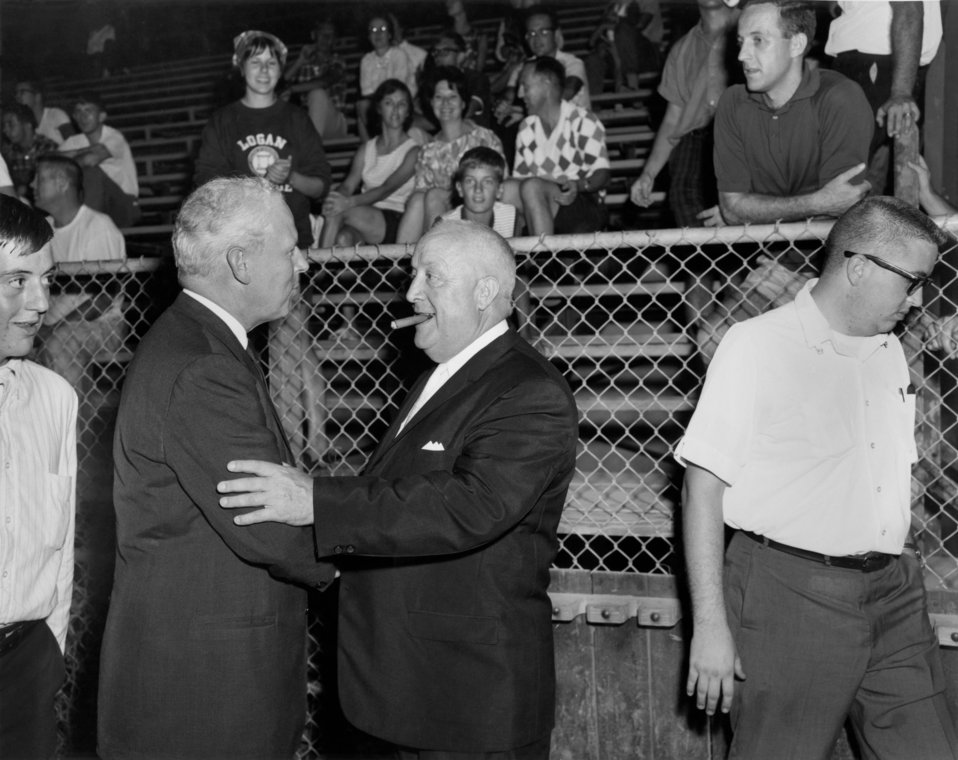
Sen. Albert Gore, Sr. at Softball Game Oak Ridge 1965

65-0546 DOE photo Ed Westcott 8-18-1965 Oak Ridge Tennessee